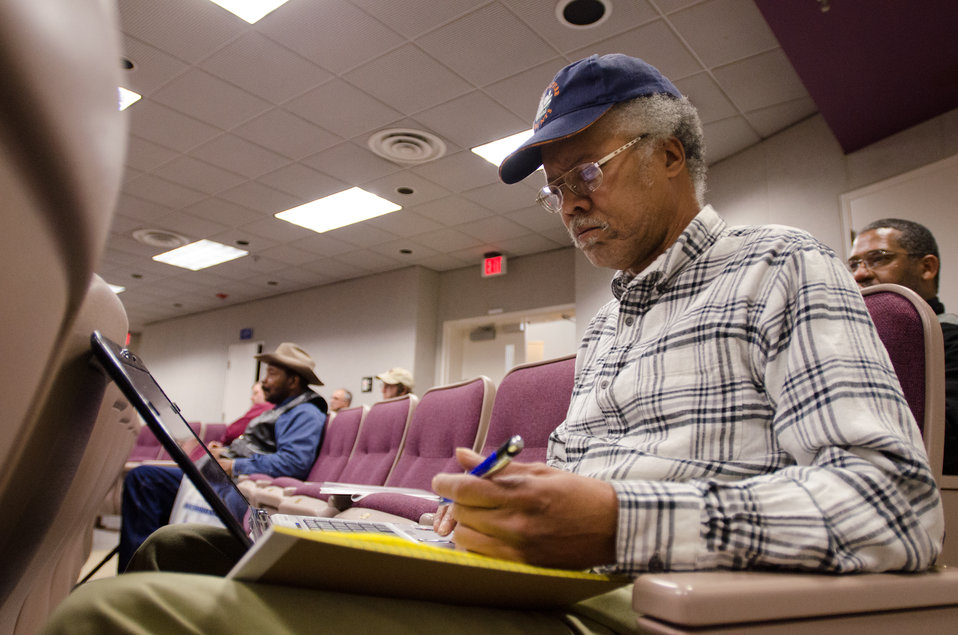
Farmers listened, questioned, took notes and gained a better understanding of resources available to them, at the “Virginia State University (VSU), U.S. Department of Agriculture (USDA) and Virginia Farmers Working Together” outreach workshop in the VSU, L. Douglas Wilder building on Thursday, March 7, 2013, in Petersburg, VA. Farmers shared and learned new ways to produce more and conduct better practices and planning of their family agriculture businesses.